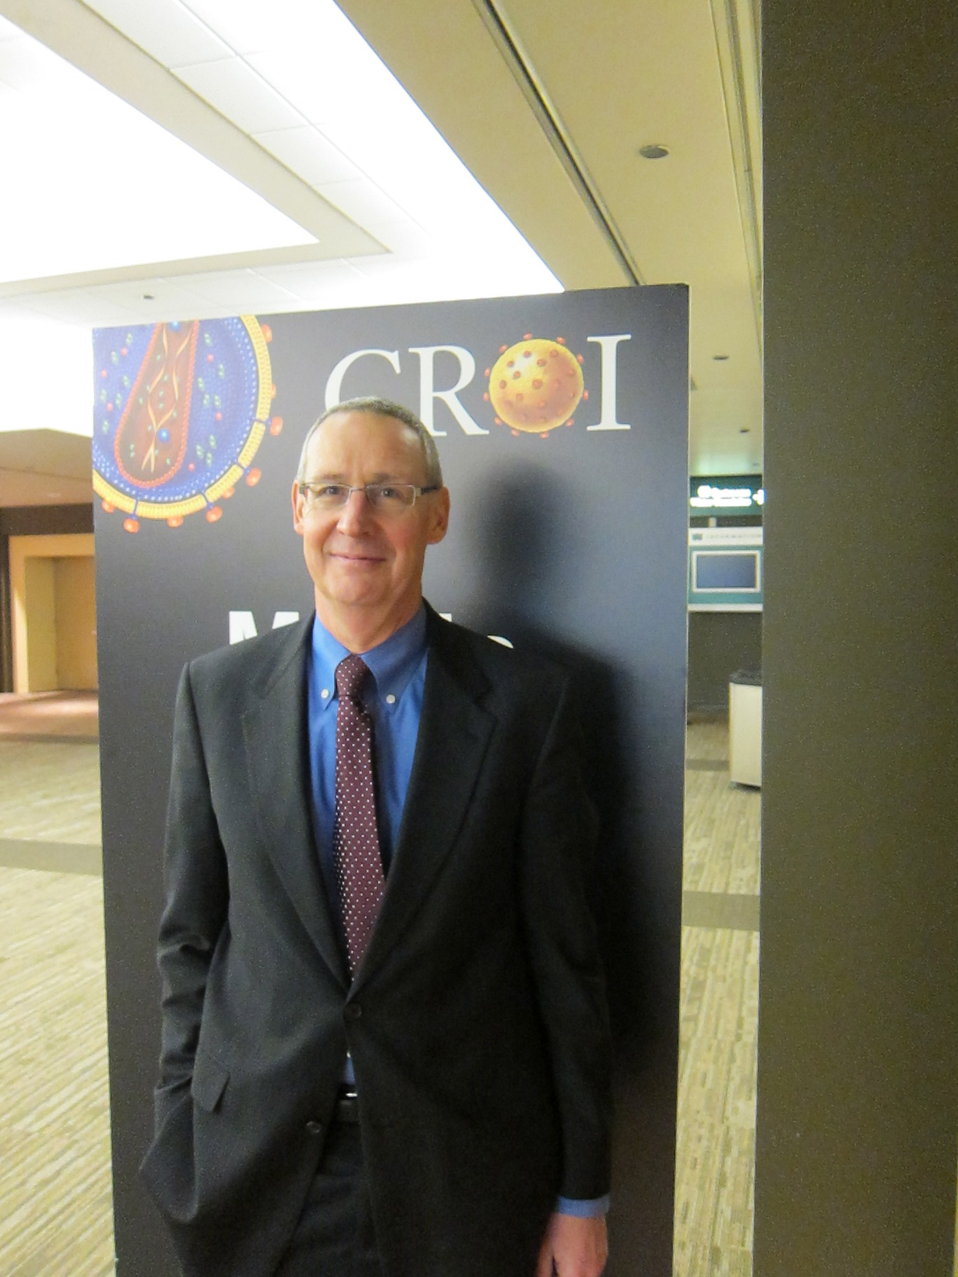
DR. CARL D AT CROI